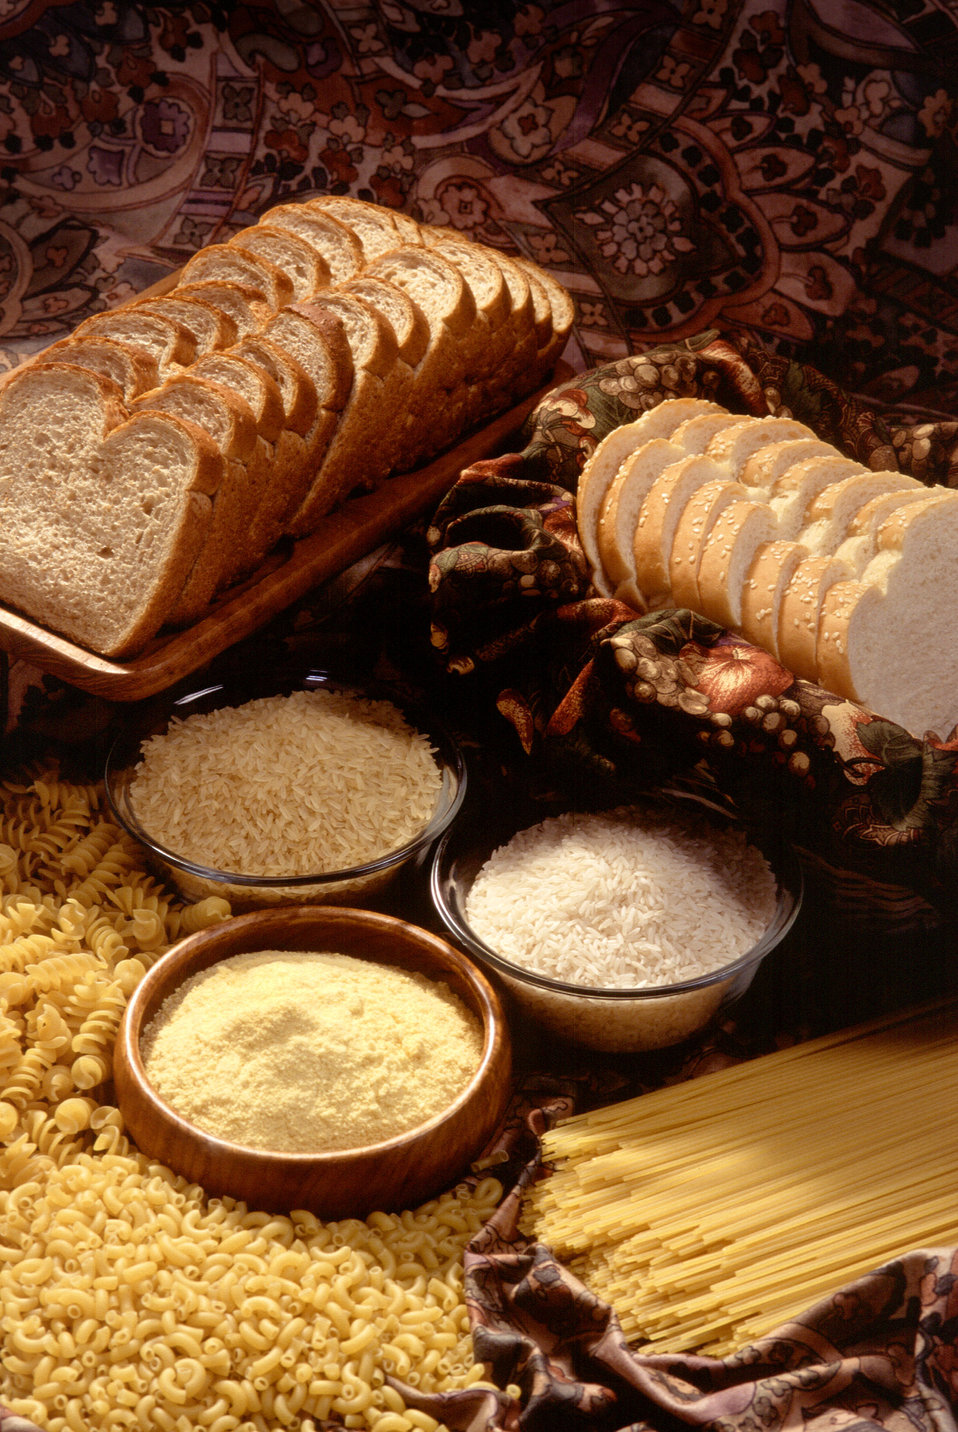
Beginning in January 1998, the B vitamin folic acid will be added to enriched bread, flour, cornmeal, rice, pasta, and other products, according to a 1996 U.S. Food and Drug Administration (FDA) regulation.